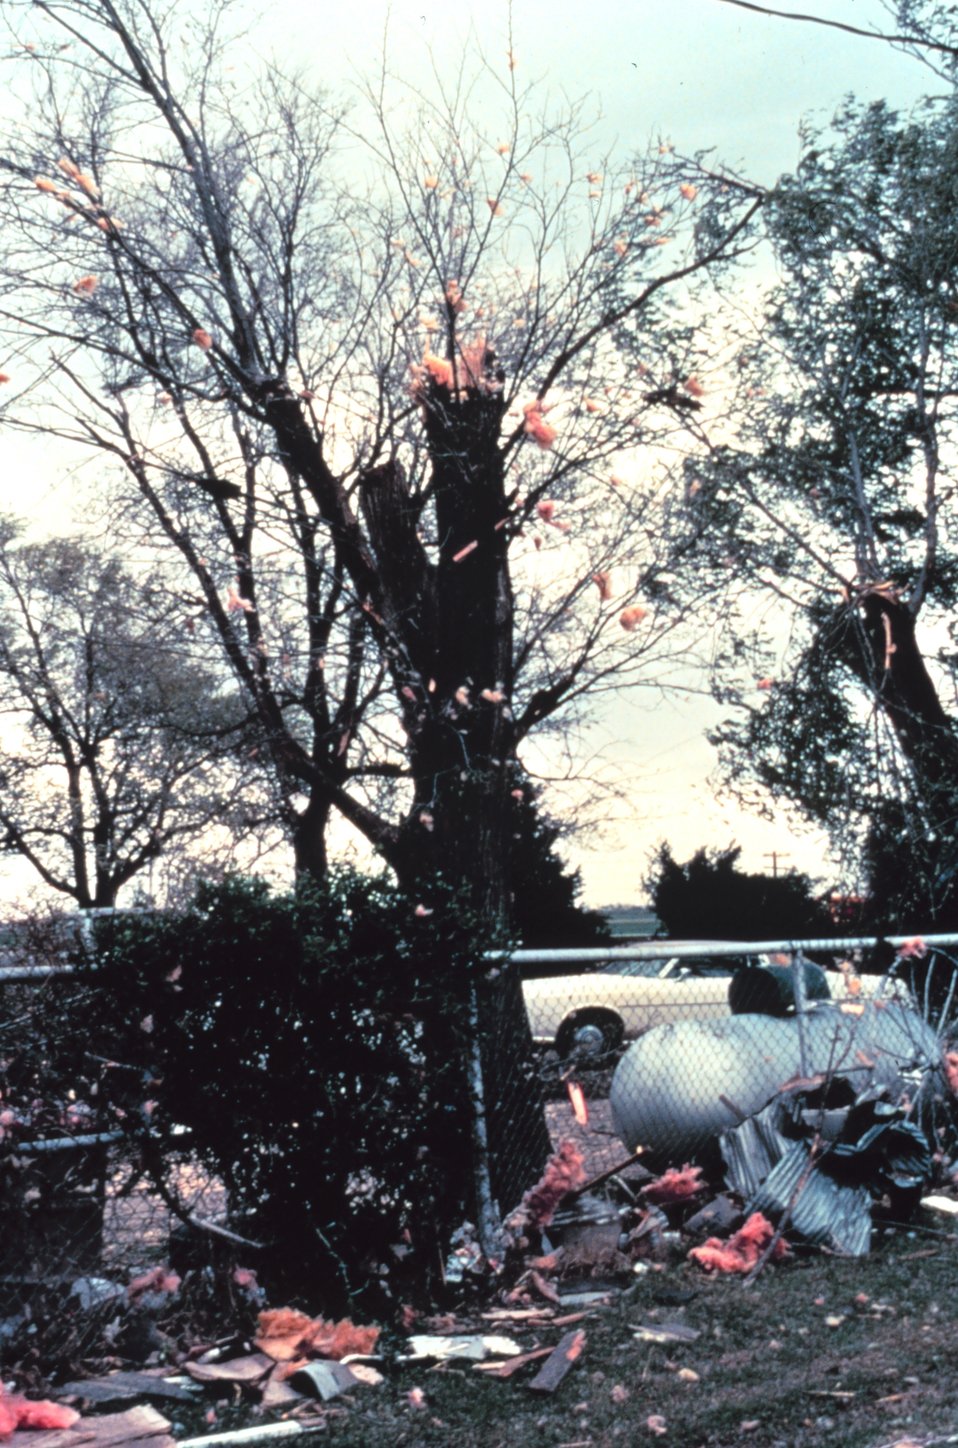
Tornado leaves a path of damage to treetops and windswept homes. Here windswept debris is collected against a fence.